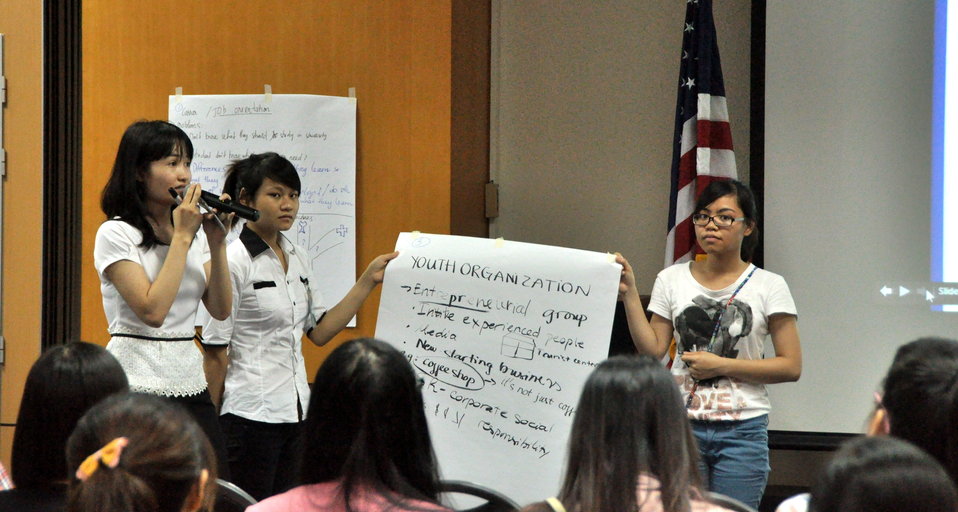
International Youth Day 2013: USAID hosts a lively discussion and group exercise on how youth can join in to advance development

Hanoi, August 12, 2013.